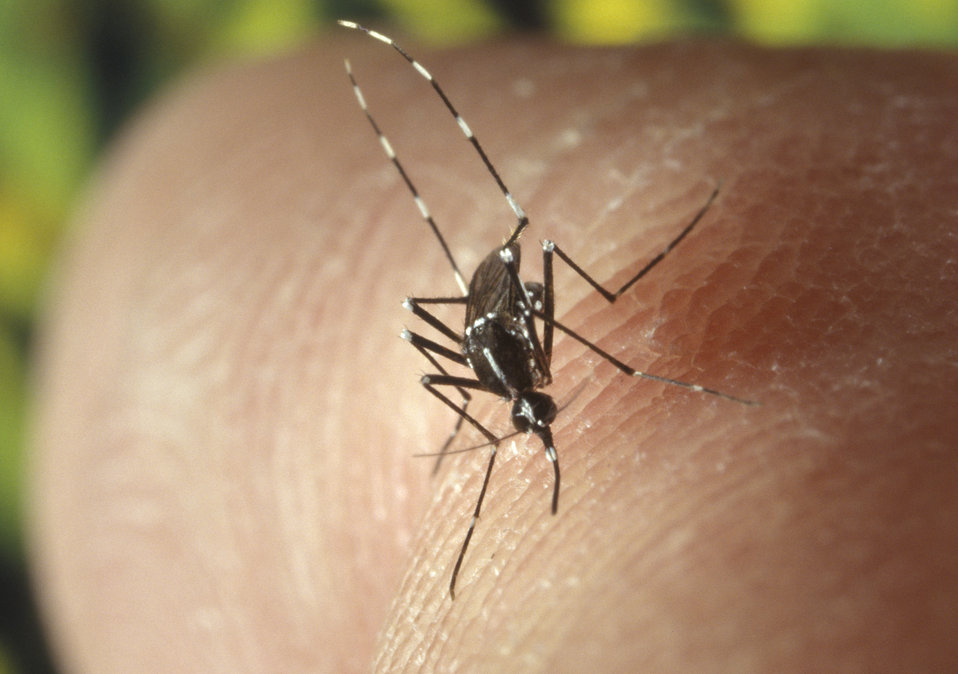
A female Aedes albopictus mosquito feeding on a human host.